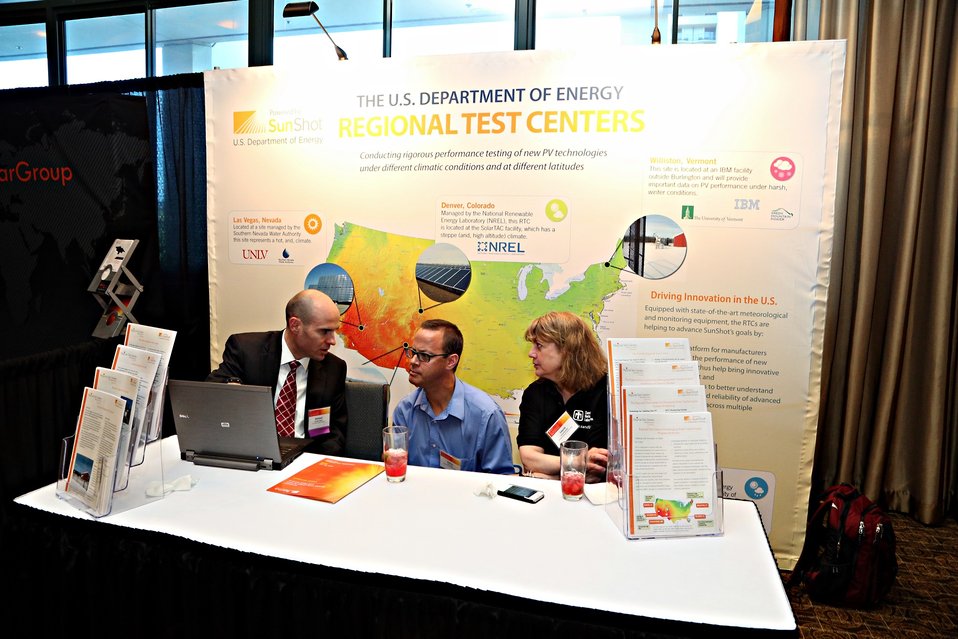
Tech Forum 22

The Energy Department Regional Test Centers booth